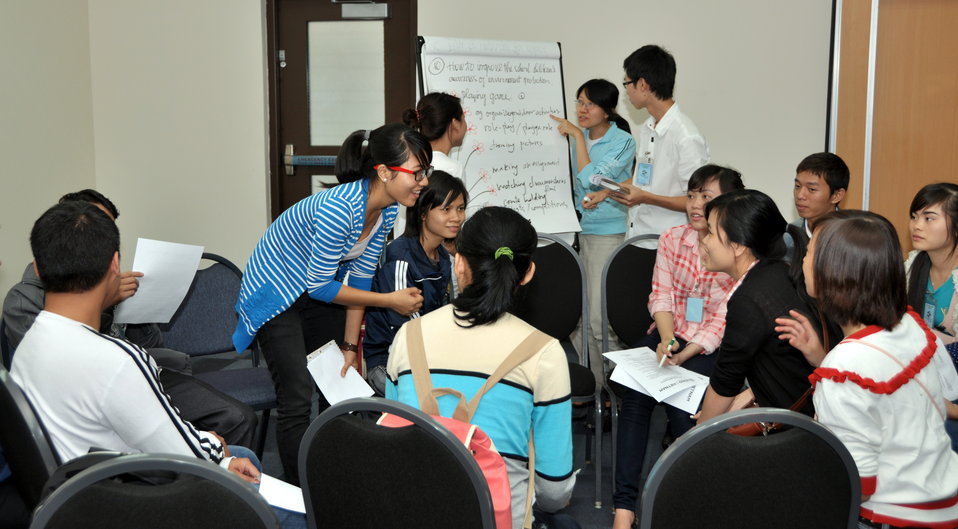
Students join the ‘USAID and Higher Education in Vietnam’ talk

Photo: @USAIDVietnam, November 19, 2012